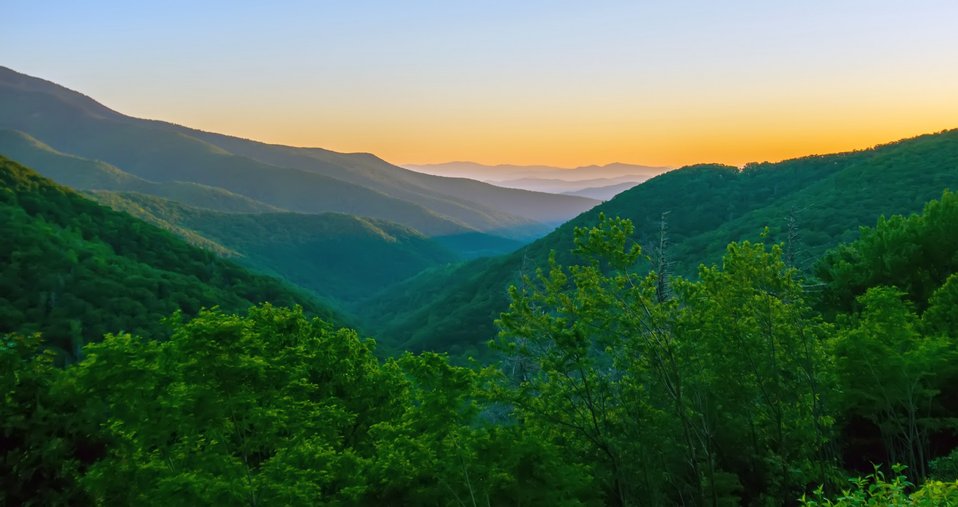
Morning after.